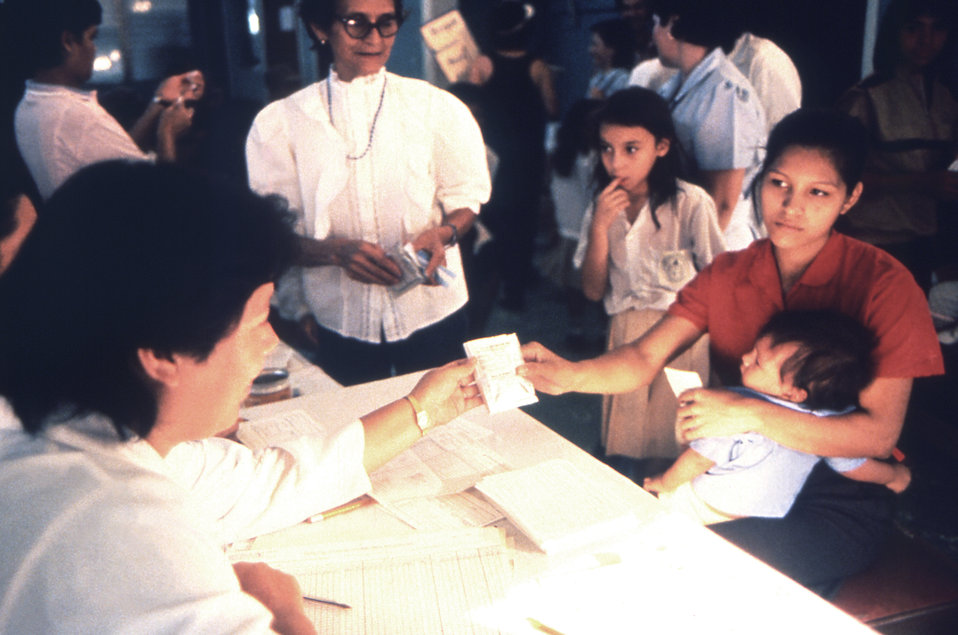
Captured in an unknown Latin-American country, this 1989 image shows a number of healthcare workers in a health clinic setting handling the needs of visitors who were there to receive various immunizations including the polio vaccine.